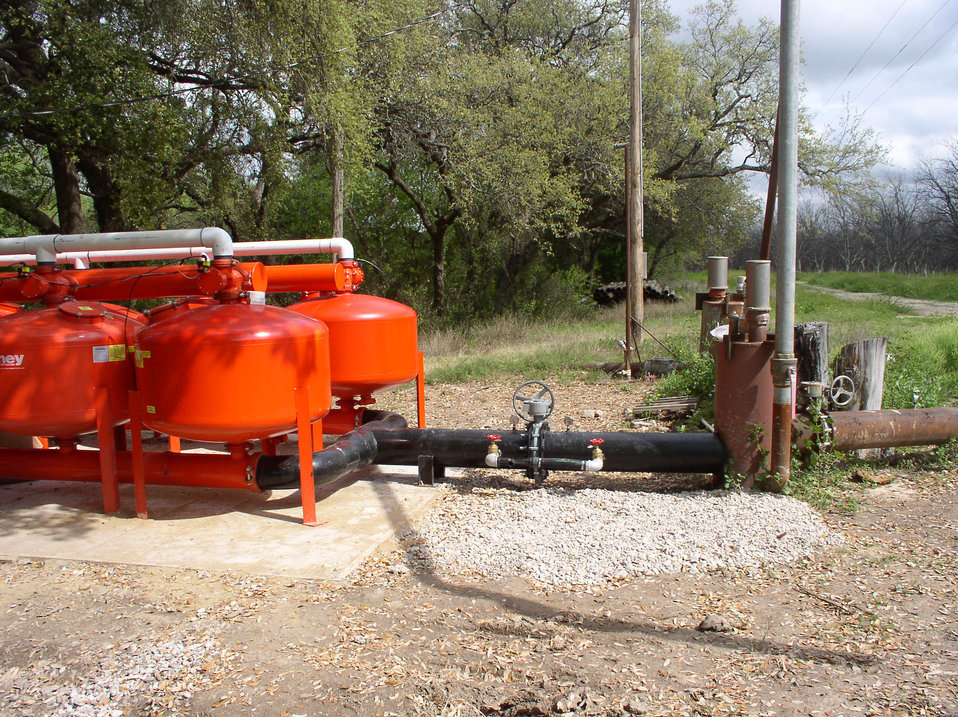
Arrowhead Farms of Zavala County, TX, now draws water from either the Nueces River (on other side of nearby trees) or deep water wells (brown pipes), either of which are filtered through sand tanks and pumped to the tree roots on Tuesday, April 6, 2010. Sediment free water is essential because, it will flow through various automated pressure and flow control valves, pipes, tubing and finally out emitters that drip water out of tiny holes at a rate of 1 gallon/hr. Each tree has several emitters under its drip line and over a typical 24 hour watering period will get just the right amount of water to survive Texas temperatures as best as possible. The farm has been owned by Mr. Akram Mohammad, a pecan farmer since 2005. The 719-acre farm with 10,000 trees, features some orchards with underground micro irrigation system that feeds water to the roots of 4,380 pecan trees on 146 acres. Mr. Mohammad said, “USDA (U.S. Department of Agriculture) was essential to my business and trees surviving the recent exceptional drought. The trees were stress free thanks to underground micro-irrigation. This is essential to the future growth of Texas agriculture and good for America.” U.S. Department of Agriculture’s (USDA) Environmental Quality Initiative Program (EQIP) awarded Mr. Mohammad a $130,000 grant in 2008. He provided $26,000 for the balance of the $156,000 total cost to install a 146-acre underground micro-irrigation for 4,380 trees.